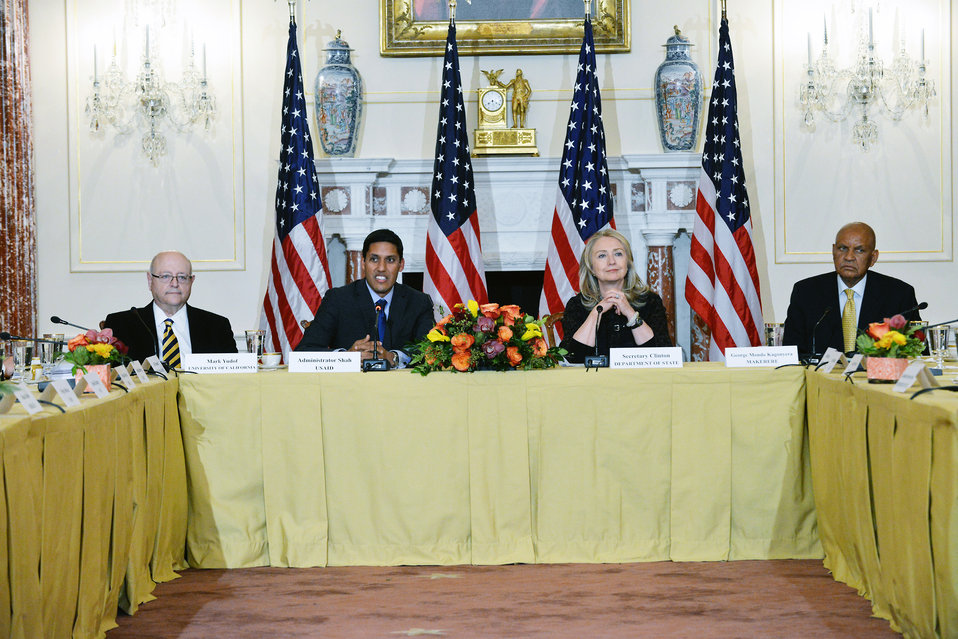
Secretary Clinton Delivers Remarks at USAID’s Higher Education Solutions Network event

U.S. Secretary of State Hillary Rodham Clinton and USAID Administrator Rajiv Shah deliver remarks at USAID’s Higher Education Solutions Network event at the U.S. Department of State in Washington, D.C., November 8, 2012.